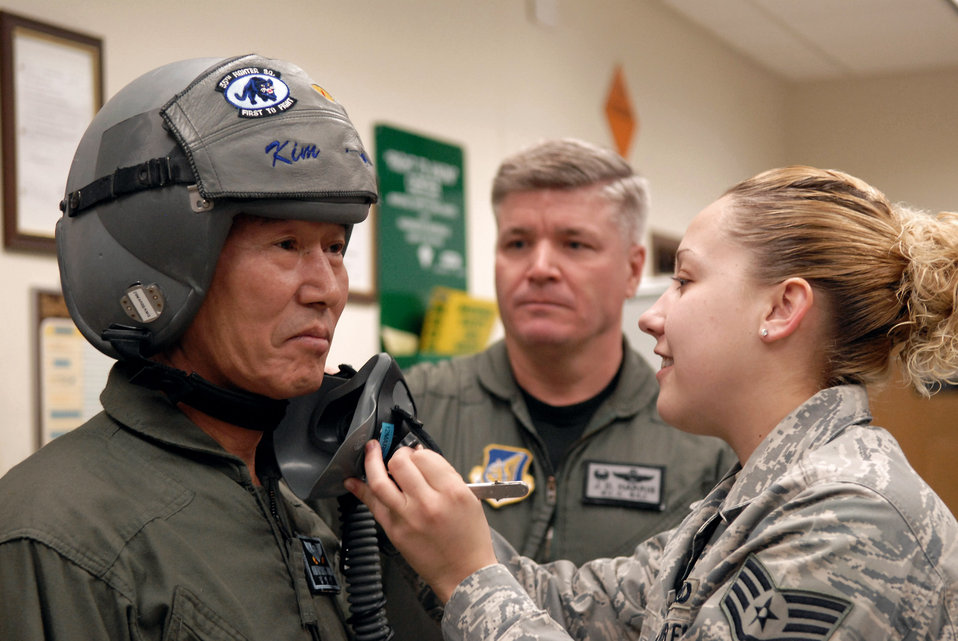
Korean VIP goes for a ride

Kim Myung Jung, Gunsan City's Korean National Police chief, is fitted for an oxygen mask by Staff Sgt. Kimberly Gage March 4 prior to an F-16 Fighting Falcon ride at nearby Kunsan Air Base, Republic of Korea. Mr. Kim participated in the Pilot for a Day program, part of United States Force Korea's Good Neighbor Program. Sergeant Gage is an aircrew flight equipment technician with the 8th Operations Support Squadron.